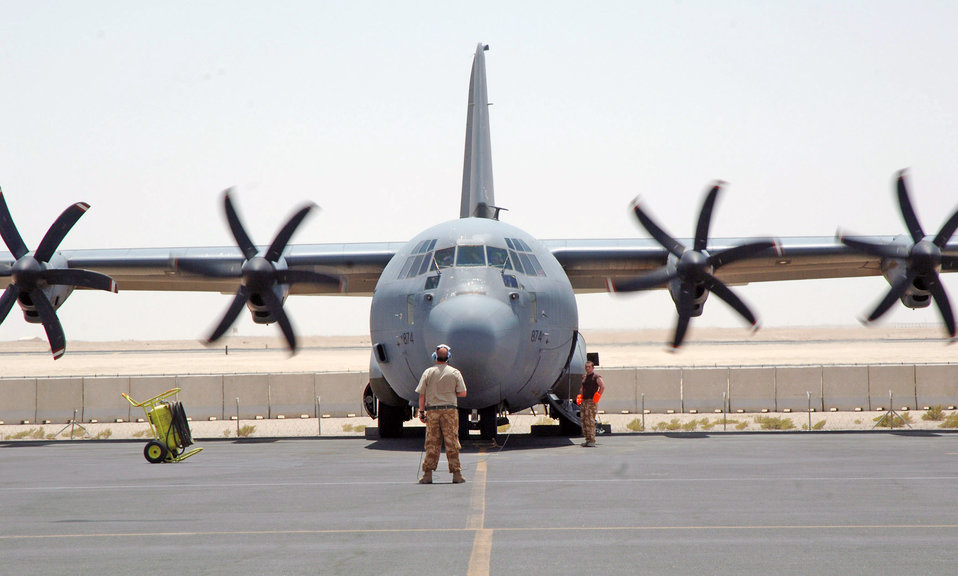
Feb. 4 airpower summary: C-130s support vital airlift missions

An Air Force C-130 Hercules taxies to a stop at a base in Southwest Asia after an airlift mission. C-130s provide intra-theater heavy airlift support transporting troops and cargo as part of operations in Afghanistan and Iraq.